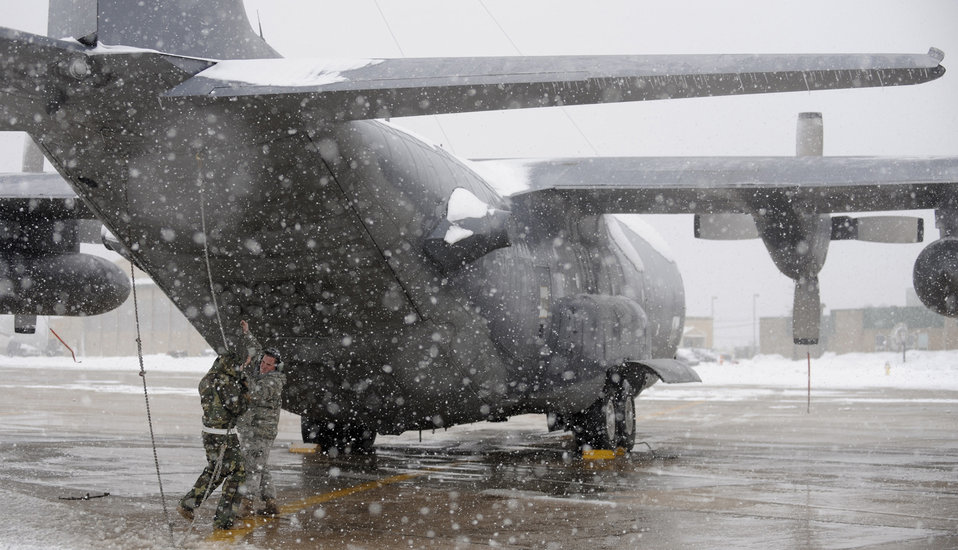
Staying in place

Airmen work to secure a HC-130 Hercules with the New York Air National Guard's 106th Rescue Wing during a snowstorm Feb. 26, 2010, at Francis S. Gabreski Airport in Westhampton Beach, N.Y.